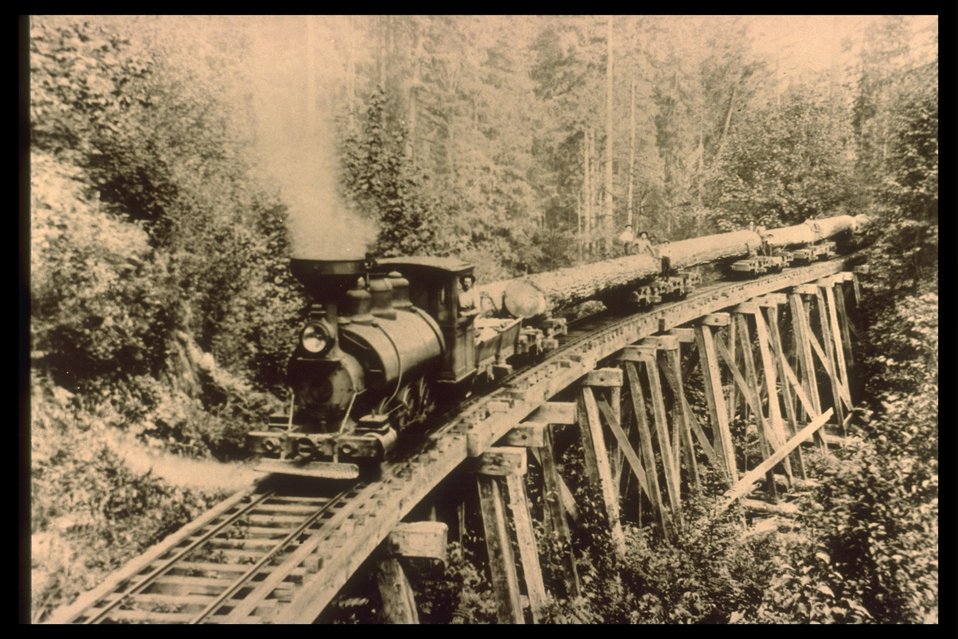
Black and white photo of an old logging train on a small wooden tressel.